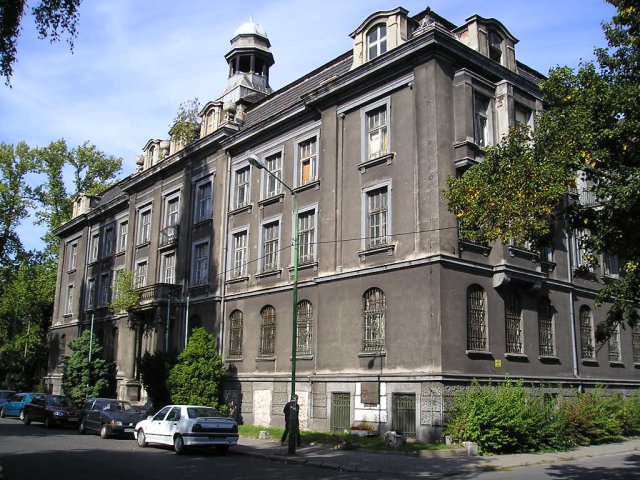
02-ratusz-hajduki